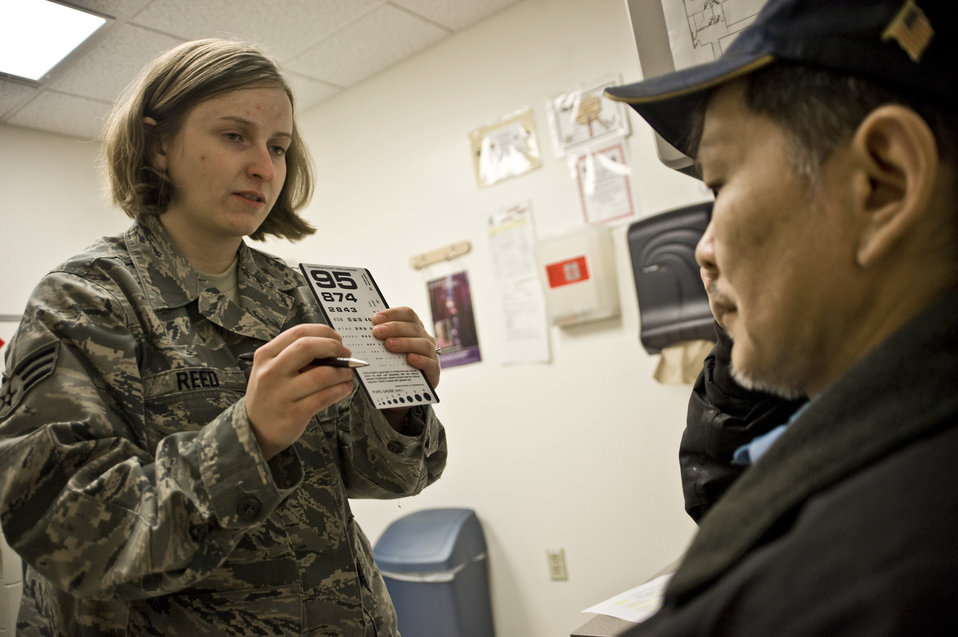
Operation Arctic Care visits Kwethluck village

Senior Airman Samantha Reed, an optometry technician from McConnell Air Force Base, Kan., conducts an eye examination on a patient March 10 at a health clinic in Kwethluk, Alaska. A joint military medical team deployed to Kwethluk, a small village in Western Alaska, in support of Operation Arctic Care 2009. This year's Navy-led mission had teams in 11 villages in Alaska's Yukon-Kuskokwim Delta region providing medical, dental and veterinary support at no cost to Alaskan natives.